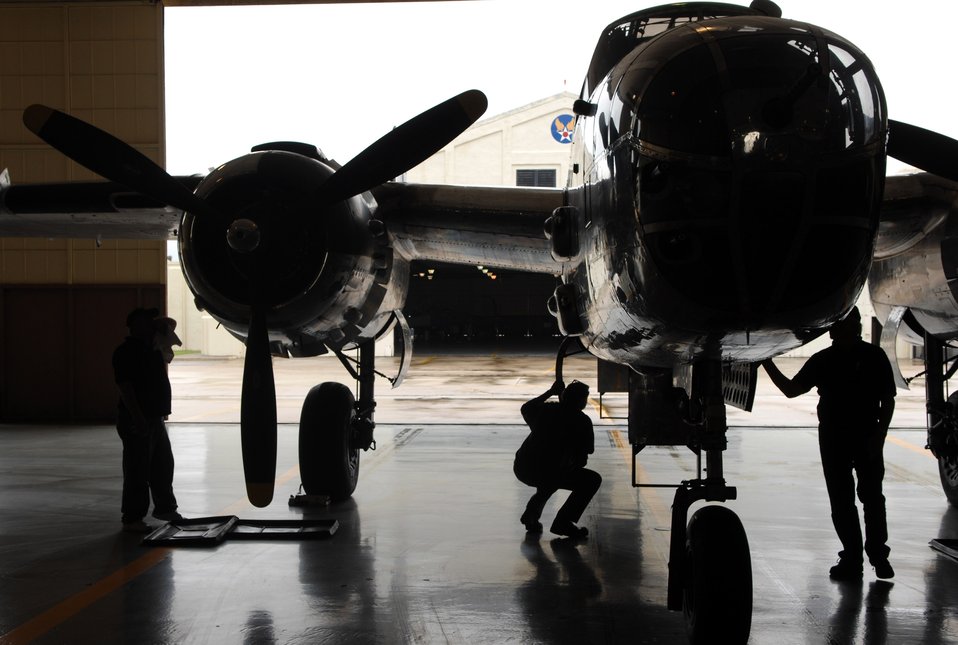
Heritage flight

Maintenance workers wipe down a B-25 Mitchell on display April 17 at Randolph Air Force Base, Texas. The plane was the backdrop for a ceremony honoring the Doolittle Raiders and the 65th Anniversary of the Doolittle raid.